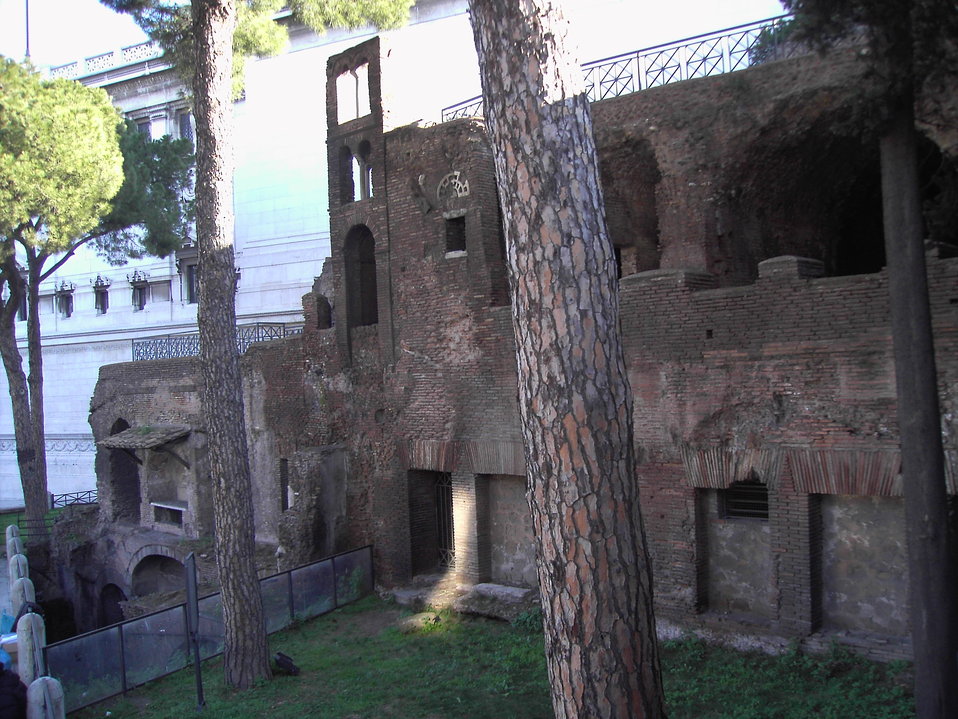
Campitelli - Insula romana 1907